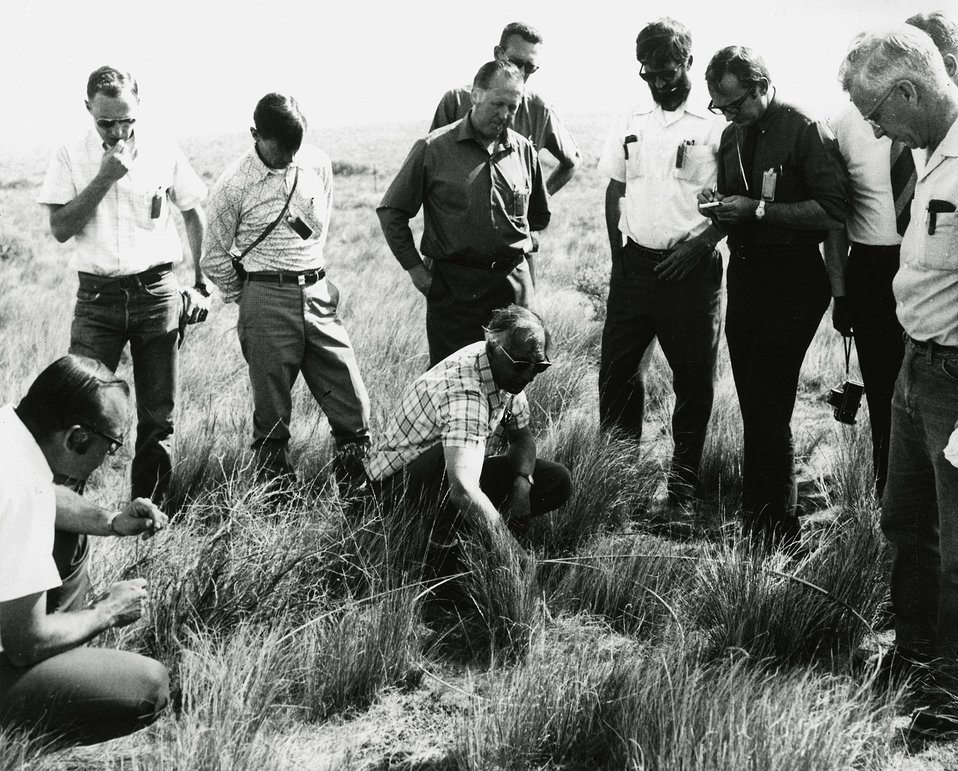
International Biological Progress investigators look on as an ecologist demonstrates a method of collecting plant samples for study on the Project ALE (Arid Lands Ecology). c. 1972